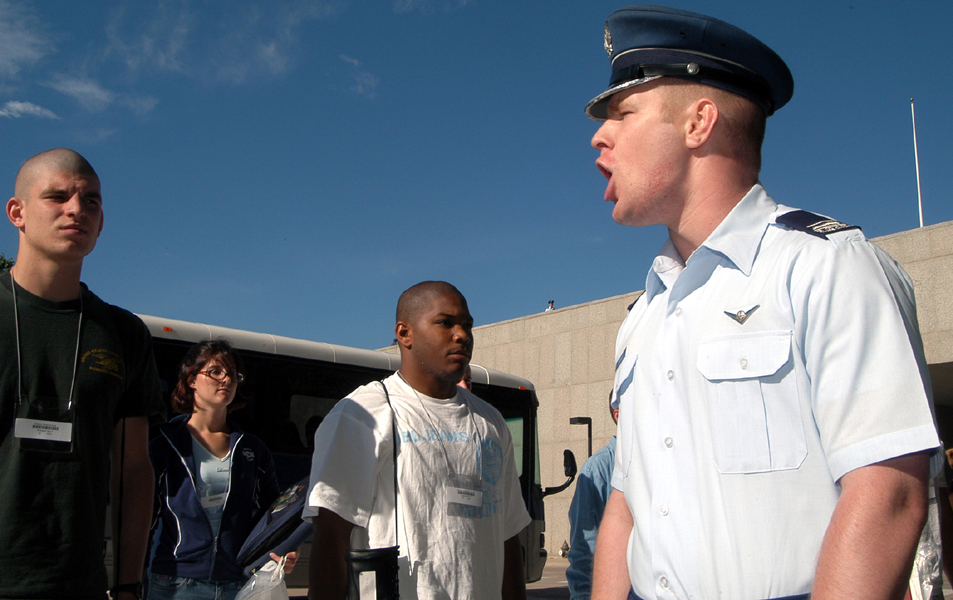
Class of 2008

U.S. AIR FORCE ACADEMY, Colo. -- Cadet 1st Class Justin Alberico (right) educates new cadets on the finer points of standing at attention during inprocessing here July 1. Cadet Alberico and other upperclassman are the primary trainers for new appointees during their indoctrination to the academy and the Air Force.